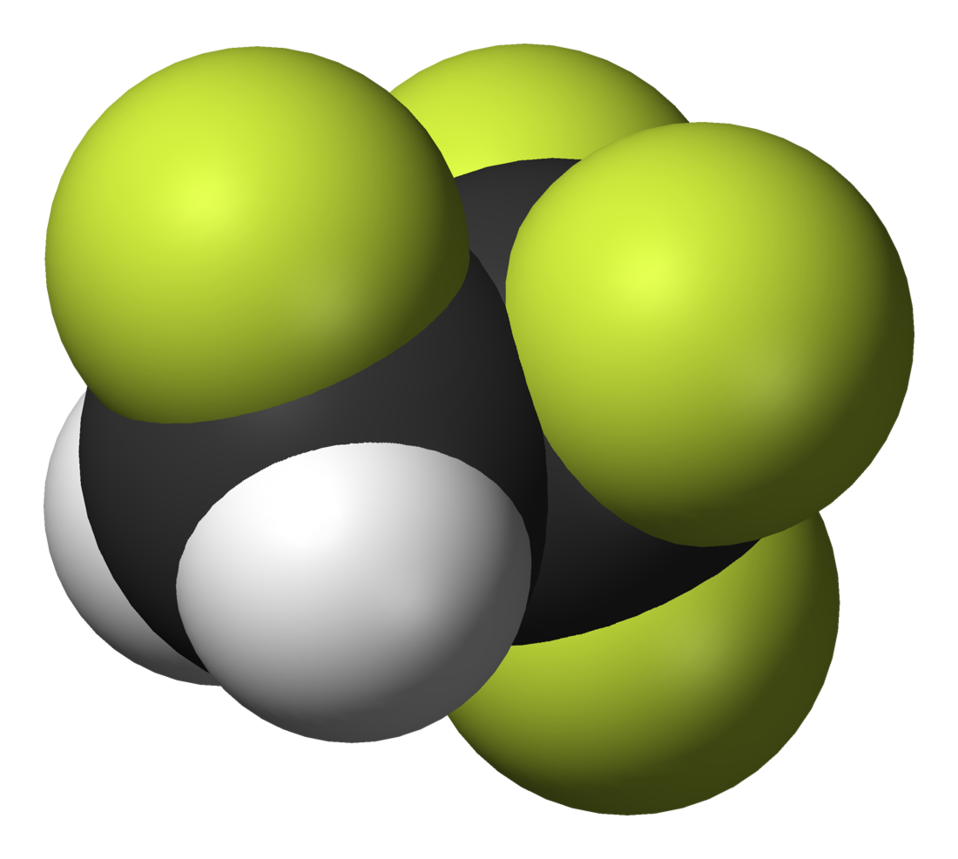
1,1,1,2-tetrafluoroethane-3D-vdW